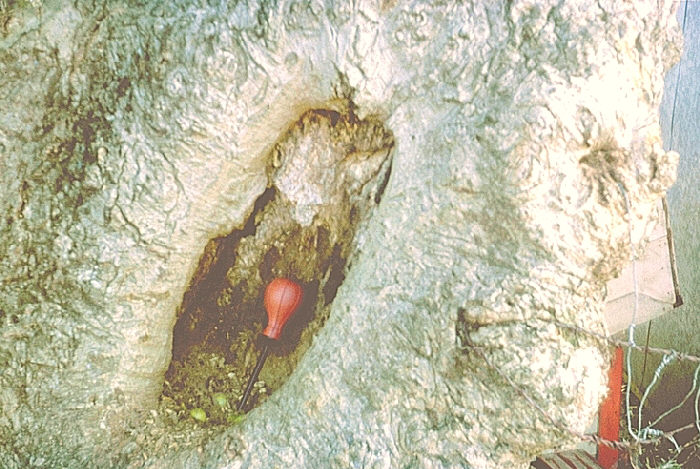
Tree hole, Aedes mediovittatus mosquito breeding site. Arecibo, Puerto Rico.